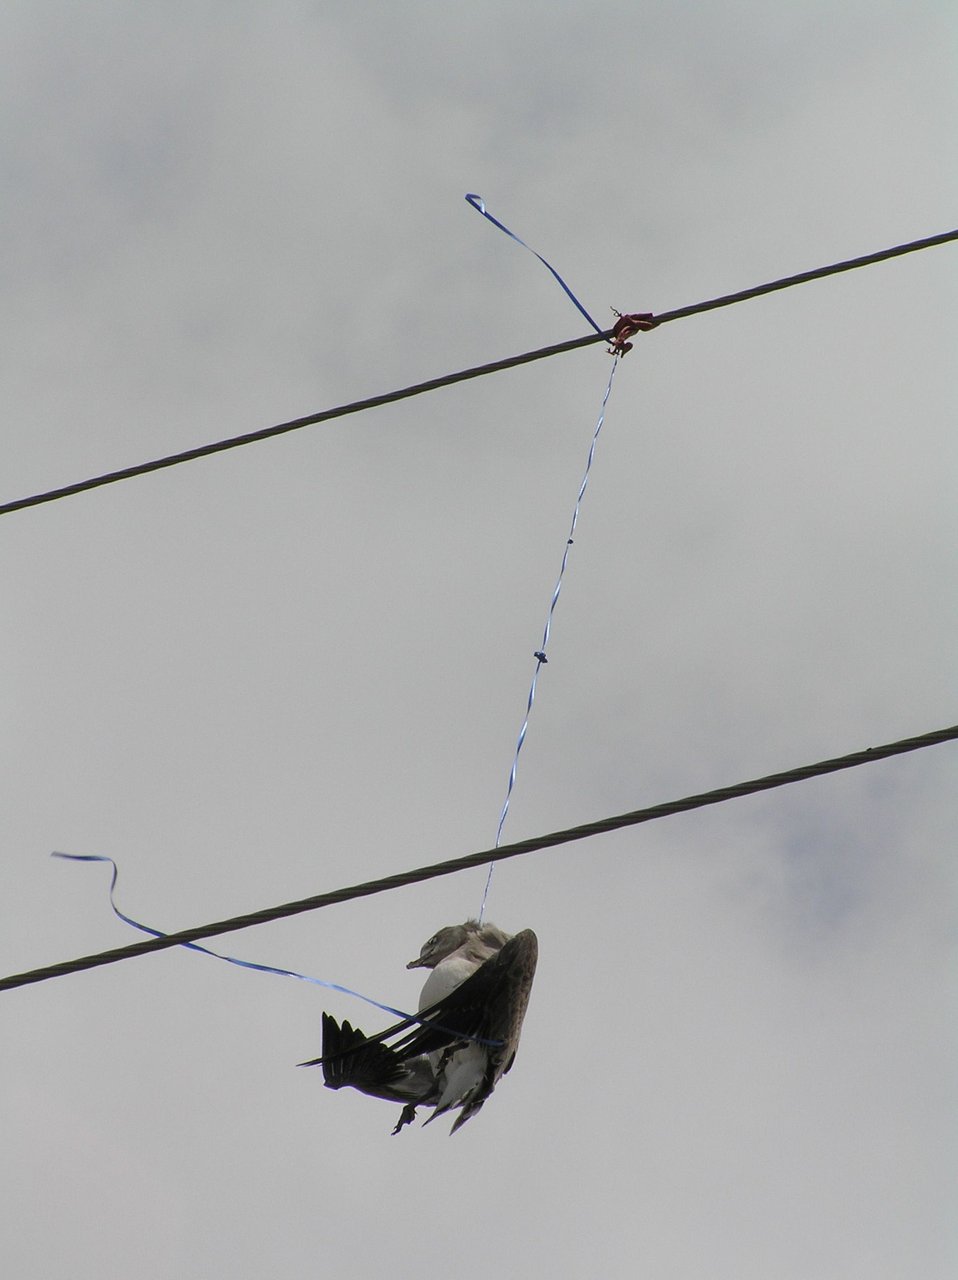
Laughing gull caught in balloon string